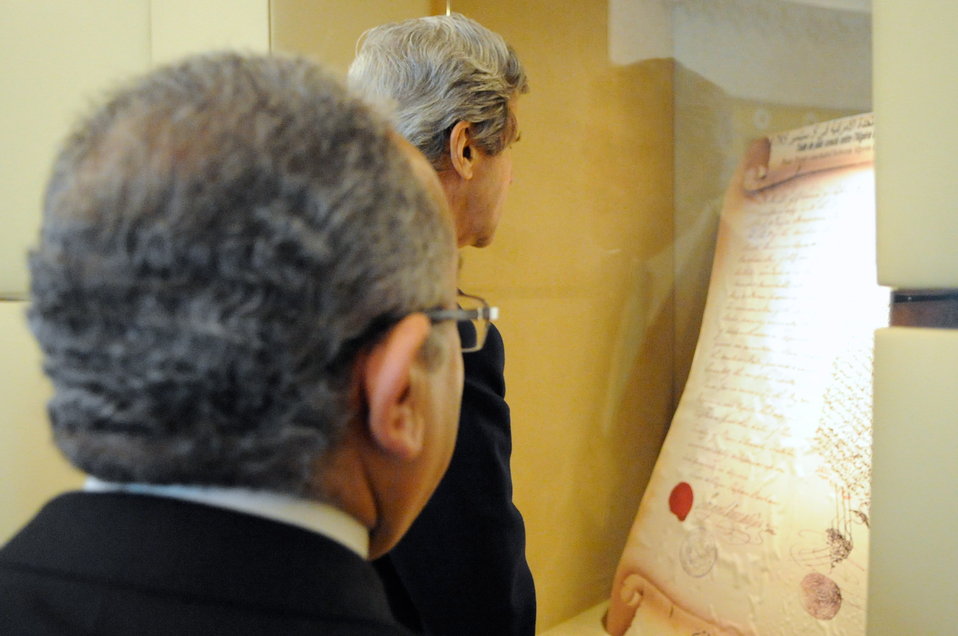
Algerian Foreign Minister Shows Secretary Kerry Treaty Between Their Two Countries

Algerian Foreign Minister Ramtane Lamamra shows U.S. Secretary of State John Kerry a historic treaty document at the outset of a Strategic Dialogue between their two countries the Ministry of Foreign Affairs in Algiers, Algeria on April 3, 2014.